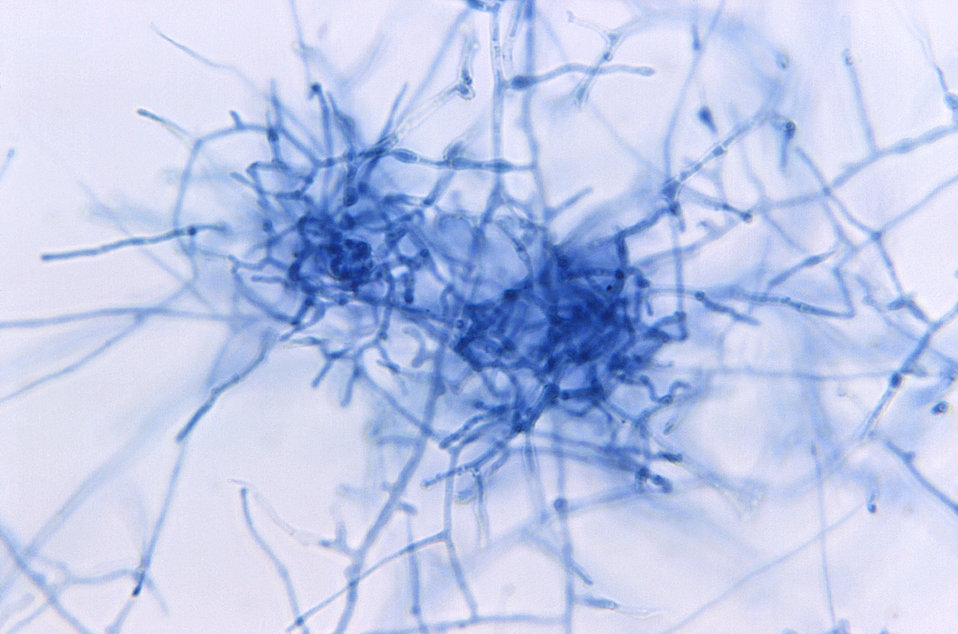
Under a relatively low magnification of 166X, this photomicrograph revealed some of the ultrastructural morphology displayed by two developing young Gymnoascus demonbreunii cleistothecia, including the tightly-woven hyphae of this fungus.